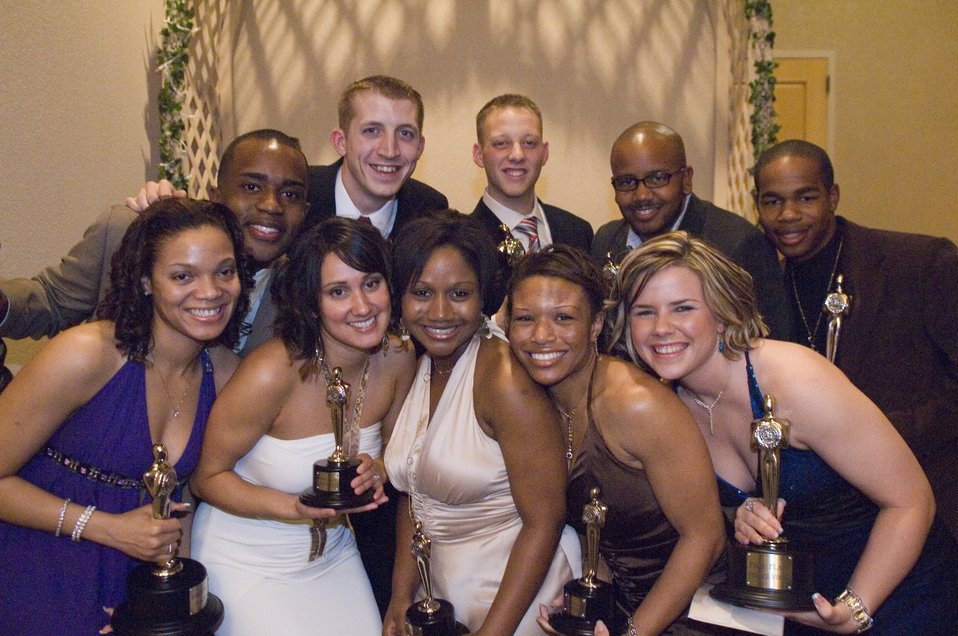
Tops in Blue Worldwide Talent Contest Banquet

The winners of the Air Force Tops in Blue Worldwide Talent competition was (left to right) Corey Sims, male vocalist; Brian Carmack, male vocalist; David Butler, specialty; Henry Roberson, instrumental bass; Chris Gadson, instrumental drums; Tyrona Pearsal, dance; Chandra Smith, female vocalist; Alice Lewis, female vocalist; Courtney Wallace, dance; and Ashley Montgomery, female vocalist. The banquet was at the collocated club on Lackland Air Force Base, Texas, Dec. 10.